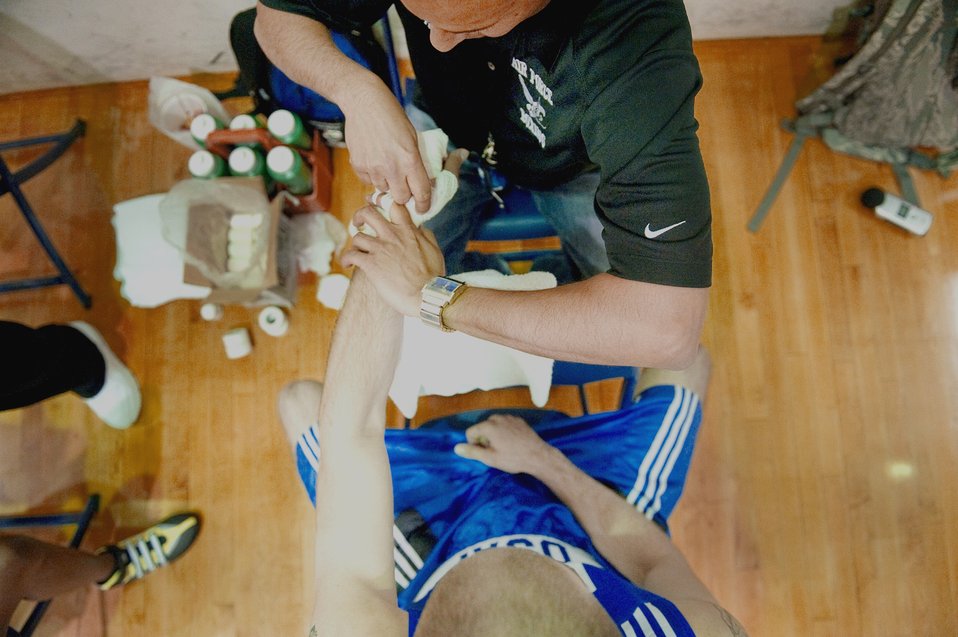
Contenders box for a spot

Coach Steven Franco wraps Senior Airman Matt McCoy's hands before competing in the Air Force Boxing Championships April 3, 2010, at the Bennett Fitness Center at Lackland Air Force Base, Texas.